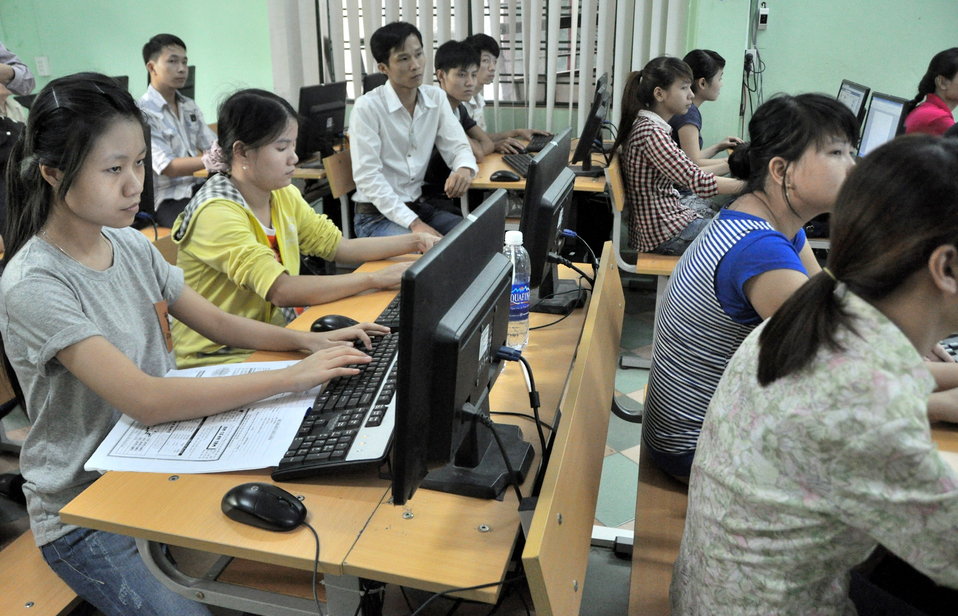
USAID Visits IT Training Program for People with Disabilities at Dong A University

Danang, Vietnam
July 17, 2013